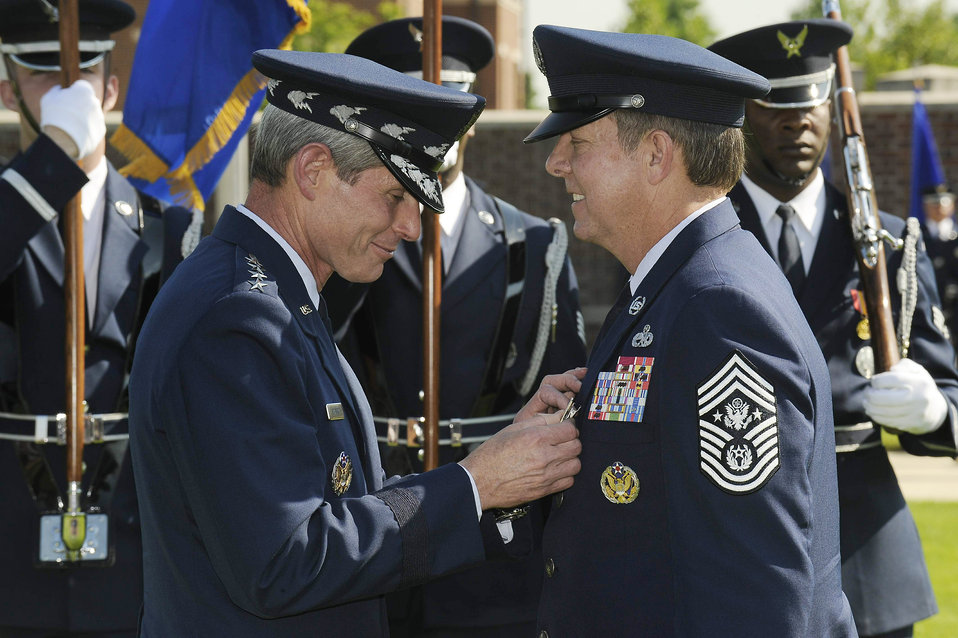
Air Force bids farewell to Chief McKinley, hails Chief Roy

Air Force Chief of Staff Gen. Norton Schwartz pins the Distinguished Service Medal on Chief Master Sgt. of the Air Force Rodney J. McKinley during his retirement ceremony June 30 at Bolling Air Force Base, D.C. Chief McKinley retired and Chief Master Sgt. of the Air Force James A. Roy was appointed as the Air Force's 16th top enlisted leader.